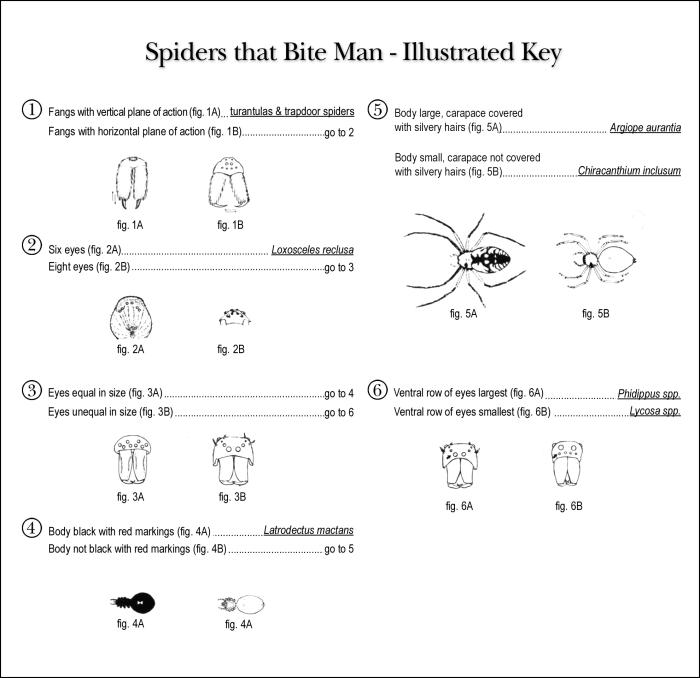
This is an illustrated key that identifies some of the spiders that bite man, along with their morphologic characteristics.